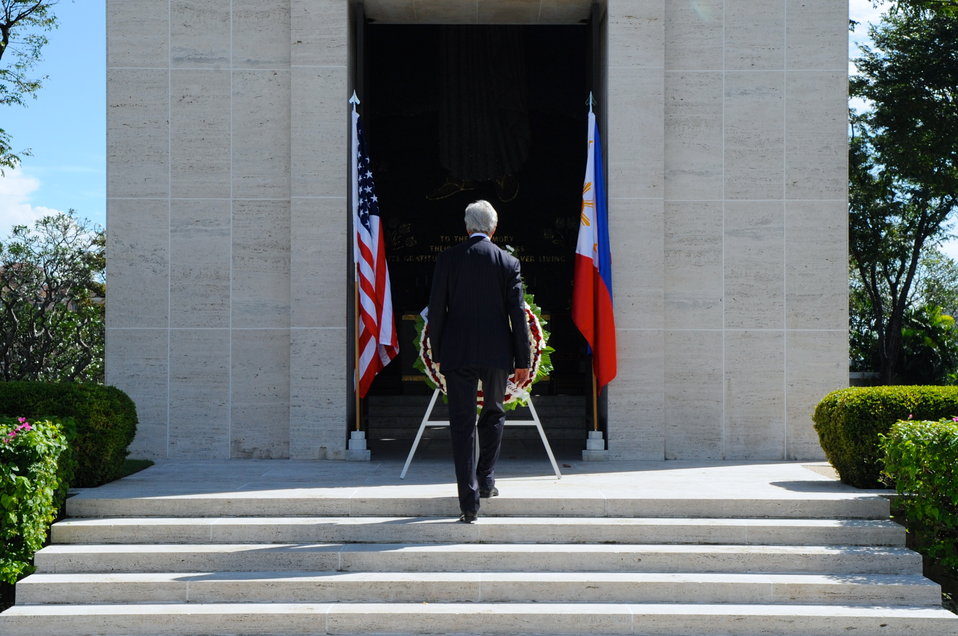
Secretary Kerry Participates in a Wreath-Laying at the American Cemetery in Manila

U.S. Secretary of State John Kerry climbs the stairs during a wreath-laying ceremony at the American Cemetery in Manila, Philippines, on December 17, 2013.